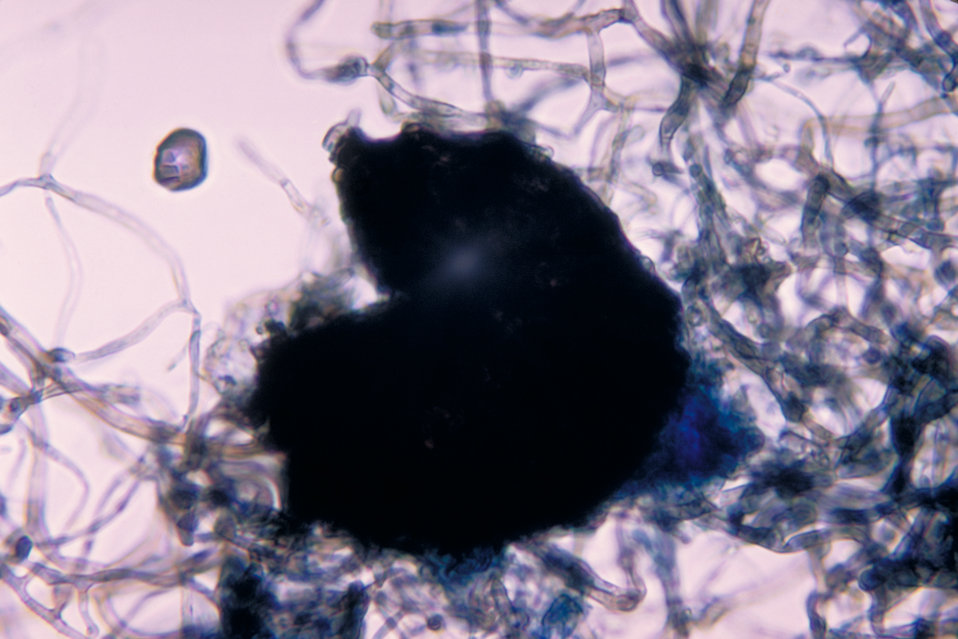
This micrograph reveals a pycnidium of the fungus Pyrenochaeta romeroi.